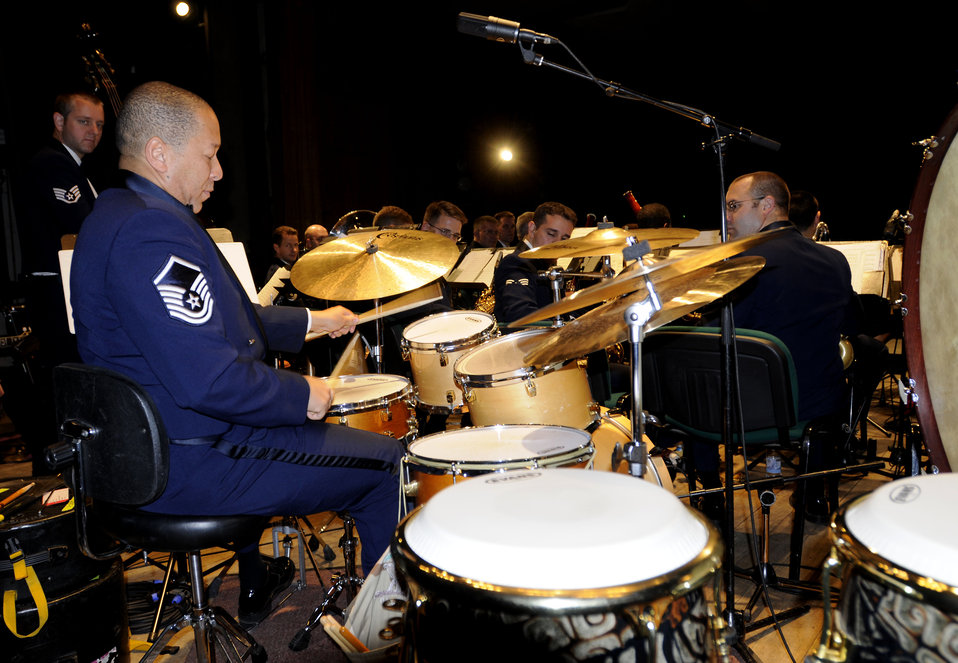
USAFE Band tours Poland

Master Sgt. Clarence Carpenter performs a drum solo during